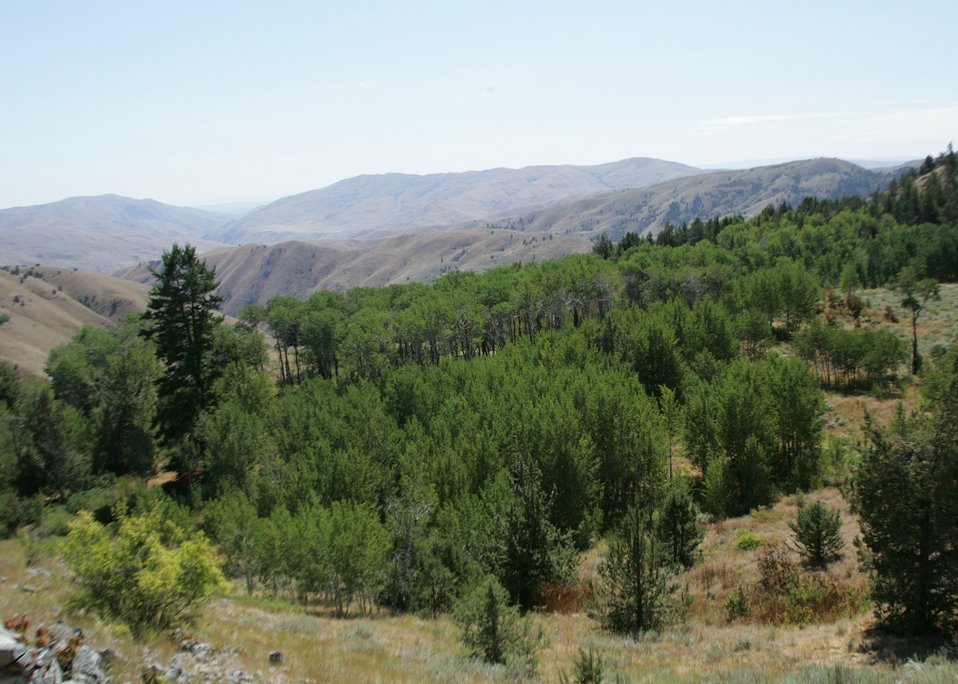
Aspen grove at the above the Connor Creek historic gold mine area in eastern Oregon.